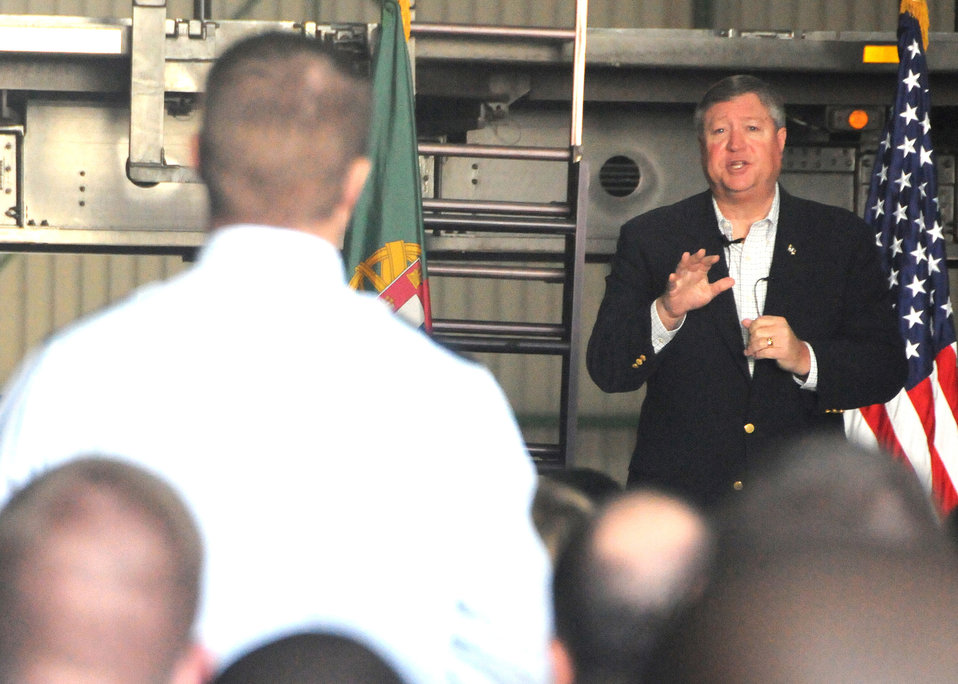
Secretary of the Air Force visits Lajes

Secretary of the Air Force Michael Donley answers a question during an Airmen's Call at Lajes Field, Azores, Dec. 19, 2011. The Secretary thanked Lajes Airmen for their service and countless sacrifices.